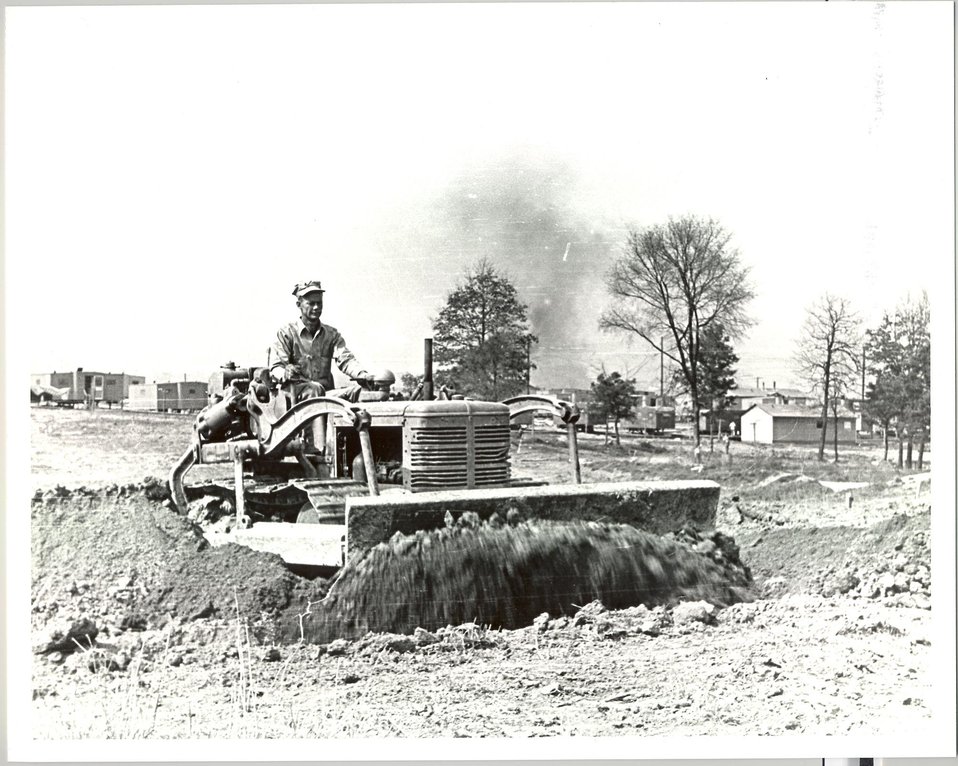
Bulldozer Scraping Construction Site